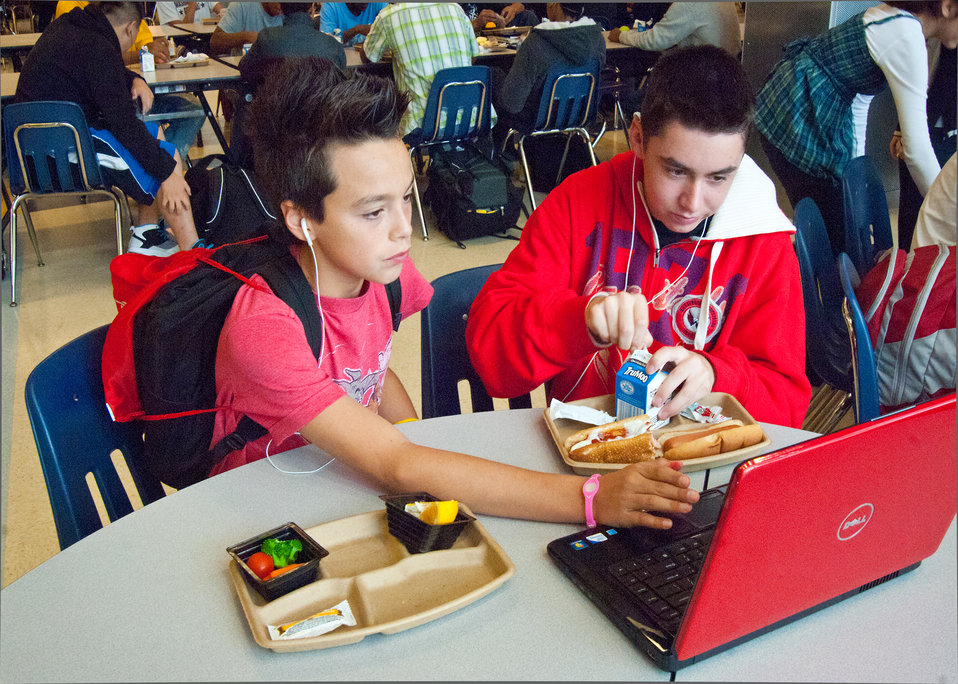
Roger Goodbold (left) and Zack Ellison (right), Washington-Lee High School students in Arlington, Virginia check their favorite soccer website during lunch on Wednesday, October 19, 2011. Looks are deceiving Ellison is enjoying a turkey hot dog with his milk for lunch. The National School Lunch Program is a federally assisted meal program administered by the United States Department of Agriculture,M Food and Nutrition Service (FNS) operating in public, nonprofit private schools and residential child care institutions. It provides nutritionally balanced, low-cost or free lunches to children each school day.